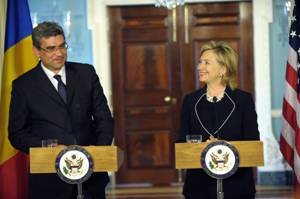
Secretary Clinton and Romanian Foreign Minister Teador Baconschi Deliver Remarks

U.S. Secretary of State Hillary Rodham Clinton and Romanian Foreign Minister Teodor Baconschi deliver remarks after their bilateral meeting at the U.S. Department of State in Washington, D.C., on June 1, 2010. [State Department/Public Domain]